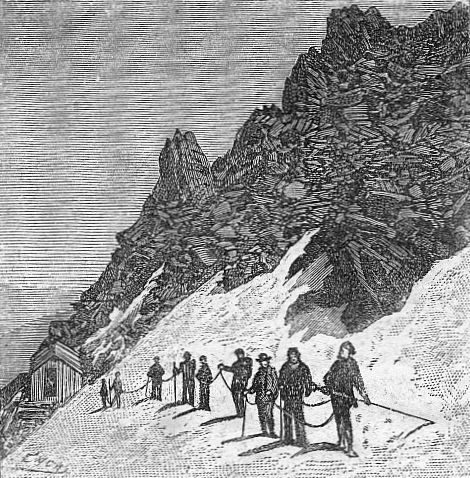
An illustration from Jules Verne's short story 'Fortieth Ascent of Mont Blanc' (fr. 'Quarantième ascension française au mont Blanc', 1871) drawn by Edmond Yon. Polski: Ilustracja opowiadania Juliusza Verne'a 'Quarantième ascension française au mont Blanc' (Czterdzieste francuskie wejście na Mont Blank , 1871) autorstwa Edmonda Yona. Français : Jules Verne: 'Quarantième ascension française au mont Blanc' (1871), dessins par Edmond Yon. Čeština: Původní ilustrace Edmonda Yona k novele J. Verna 'Čtyřicátý francouzský výstup na Mont Blanc'.